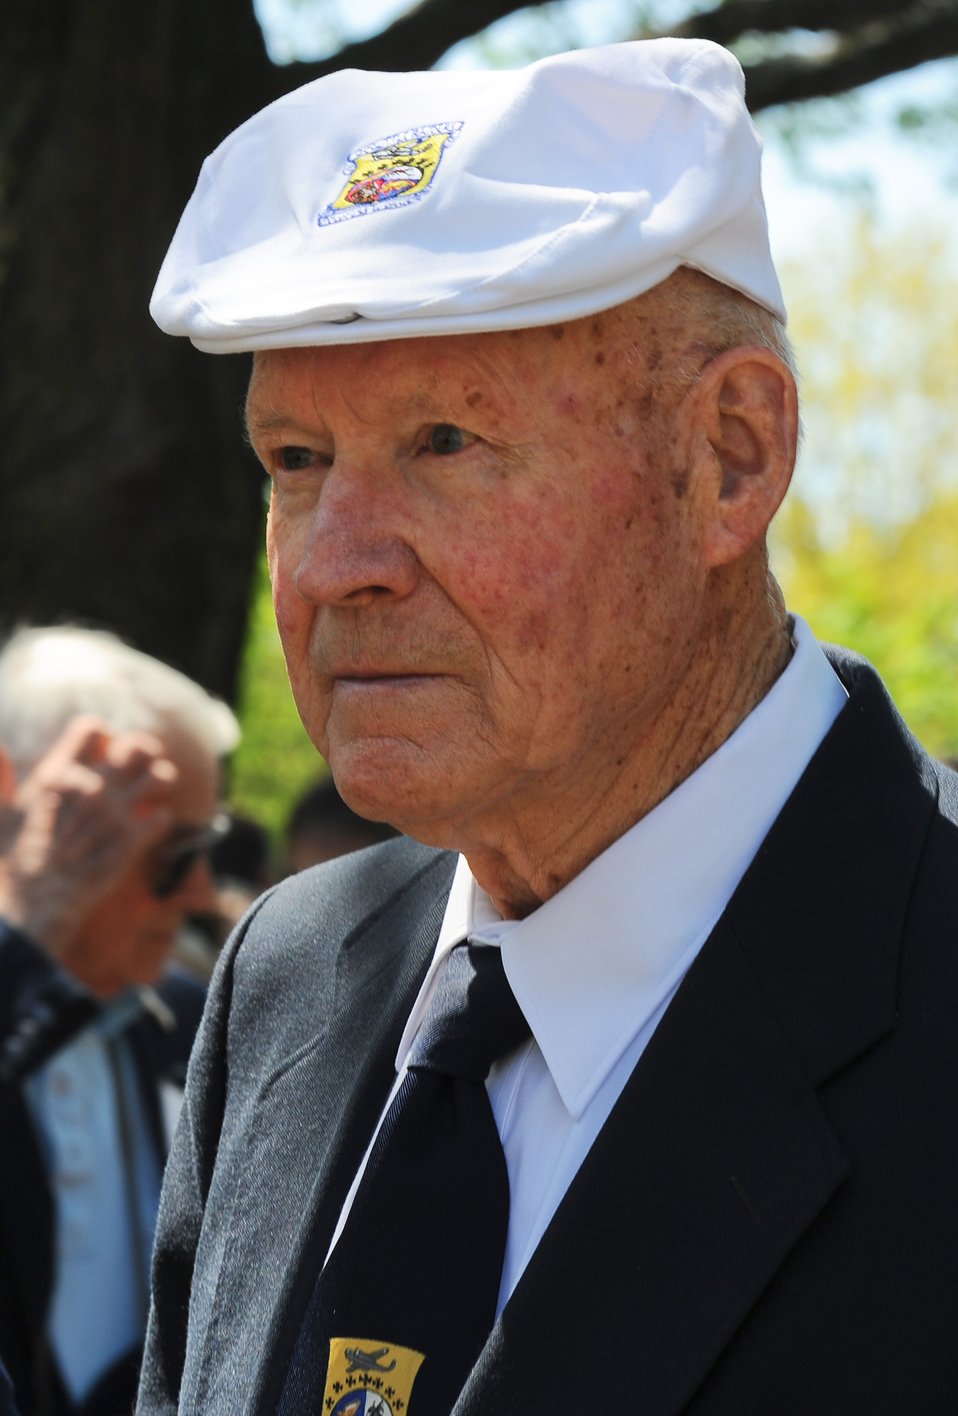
Doolittle Raiders Reunion

Master Sgt. David J. Thatcher, a Doolittle Raider attends a memorial service honoring the all the Doolittle Raiders. This 68th reunion was held at the National Museum of the U.S. Air Force, April 18 2010, Wright-Patterson Air Force Base, Dayton, Ohio.